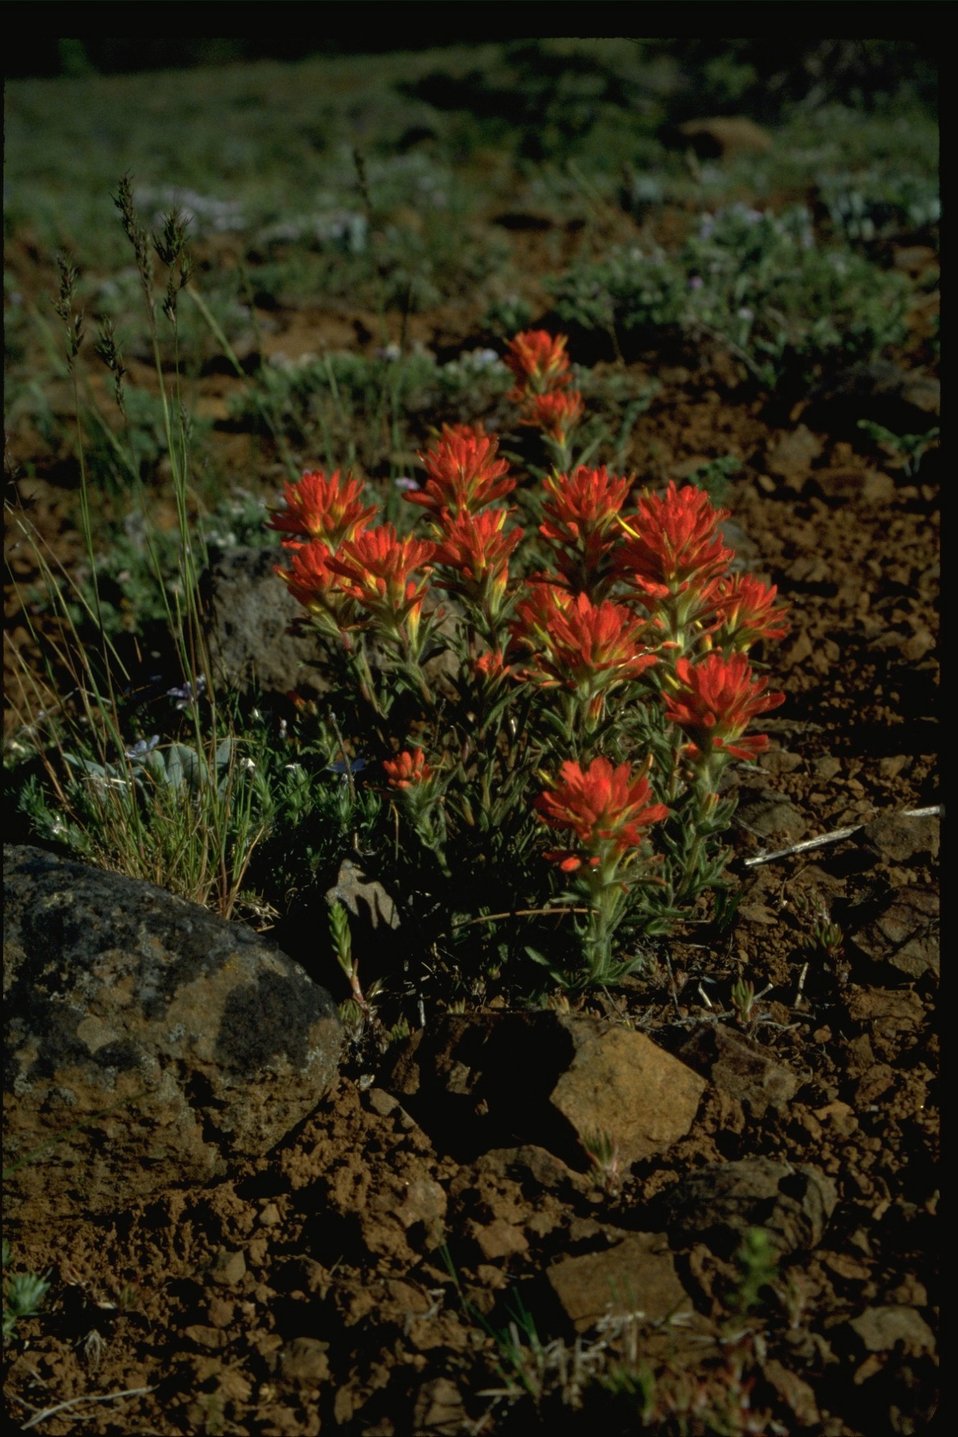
Medium shot of Indian Paintbrush wildflowers.